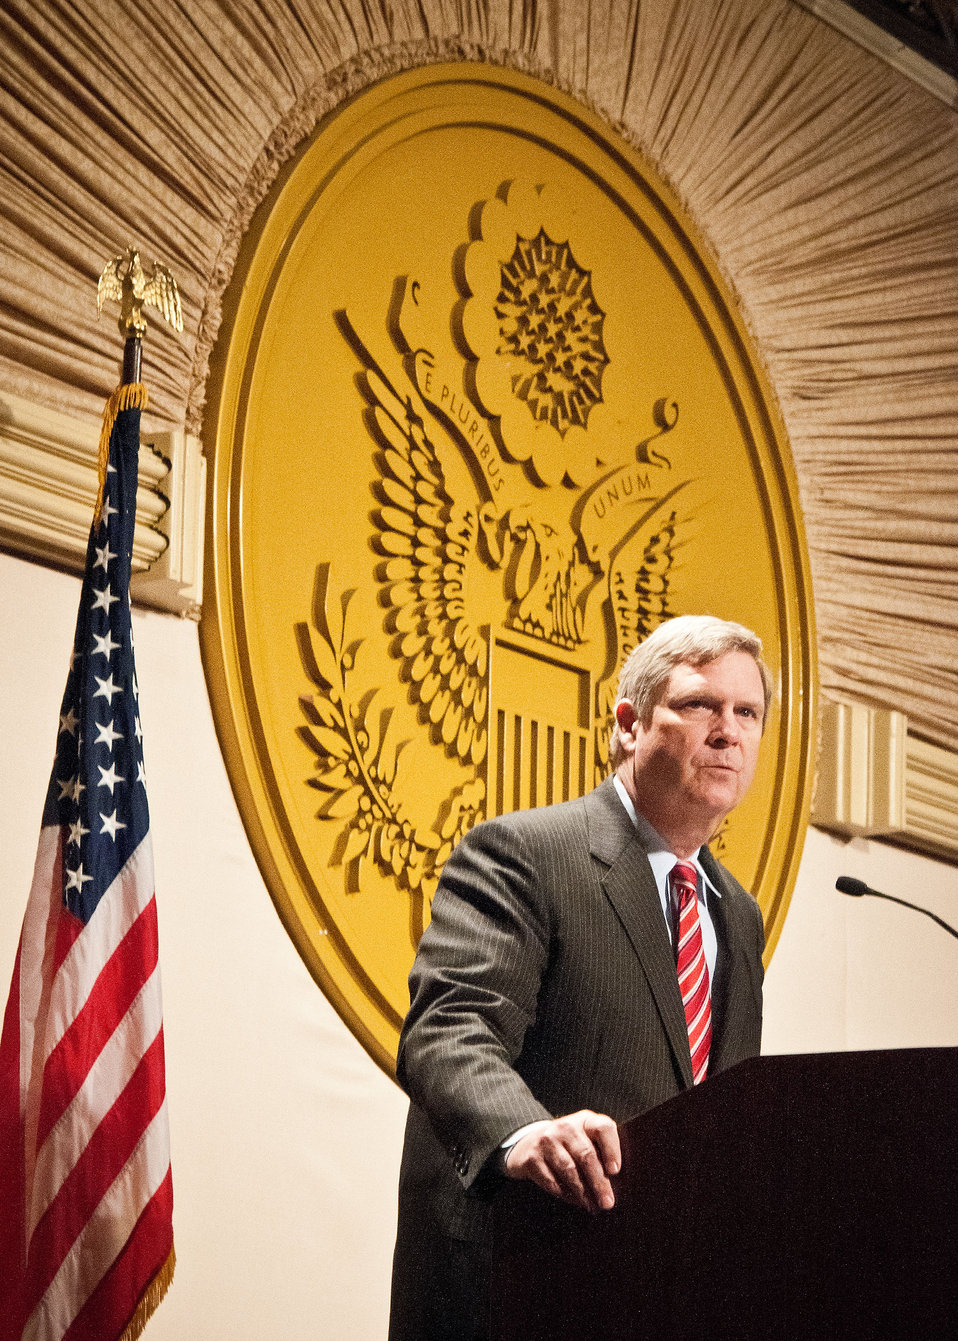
Agriculture Secretary Tom Vilsack was the keynote speaker at the Advanced Biofuels Leadership Conference to highlight the Obama Administration’s “all of the above” approach to energy in America – including renewable energy at the Capital Hilton Hotel in Washington, D.C., on Tuesday, April 3, 2012. Secretary Vilsack spoke of the economic benefits to rural America, reduced foreign oil consumption and job production. The theme of the conference was, “Go Big, Stay Strong.” As advanced biofuels move from the lab and compete for commercialization, stakeholders are strongly investing while balancing the need to stay in an uncertain policy and financial environment. At ABLC, networks are formed, relationships are developed, and decisions are made with people in a position to make a difference and those who make decisions.